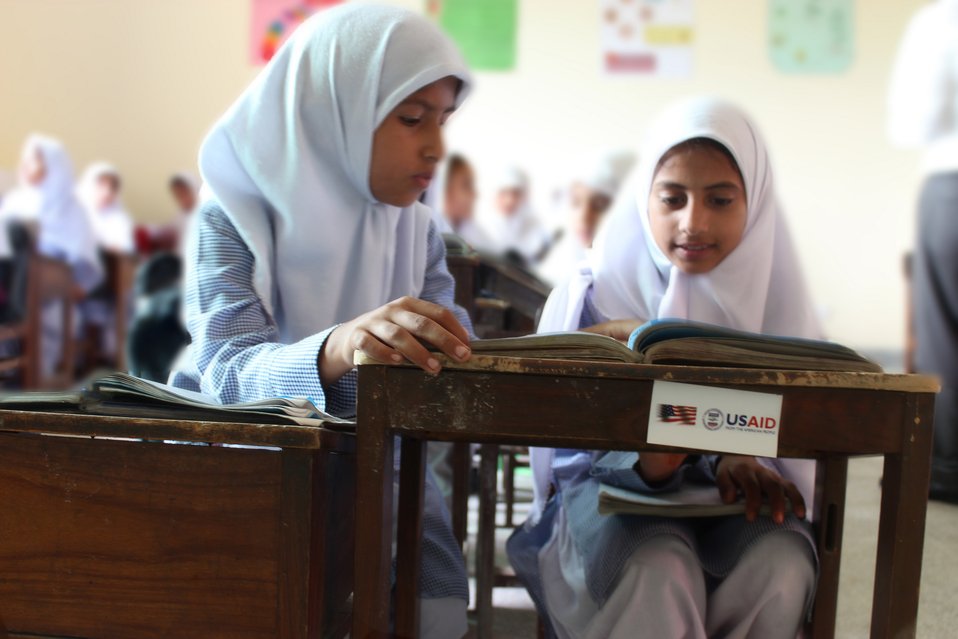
Students studying in the newly completed school

Sept 06, 2012 : Construction (first and second floor) of Tameer-e-Millat Model School for Girls (TMMSG) in village Latwal, of Tehsil Fateh Jhang has been completed and on Sept 06, 2012 Project closing and School opening ceremony was held in which students, teachers, parents and community leaders participated.